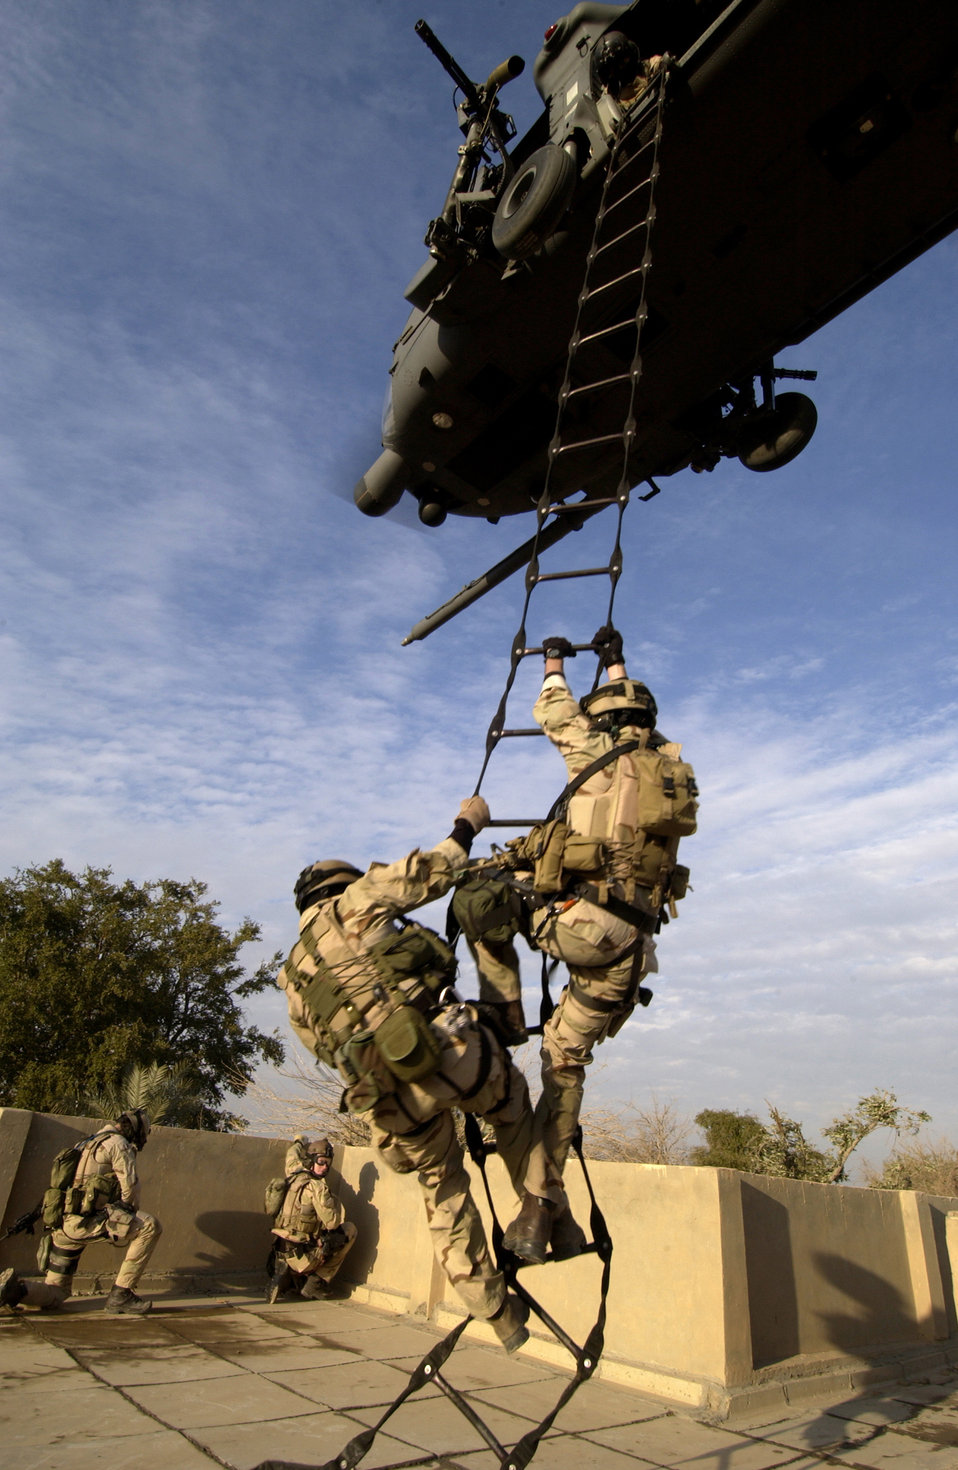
On the move

BAGHDAD, Iraq -- Air Force pararescuemen are extracted from an abandoned housing site here Dec. 20 by an HH-60G Pave Hawk helicopter. The Airmen are assigned to the 64th Expeditionary Rescue Squadron.